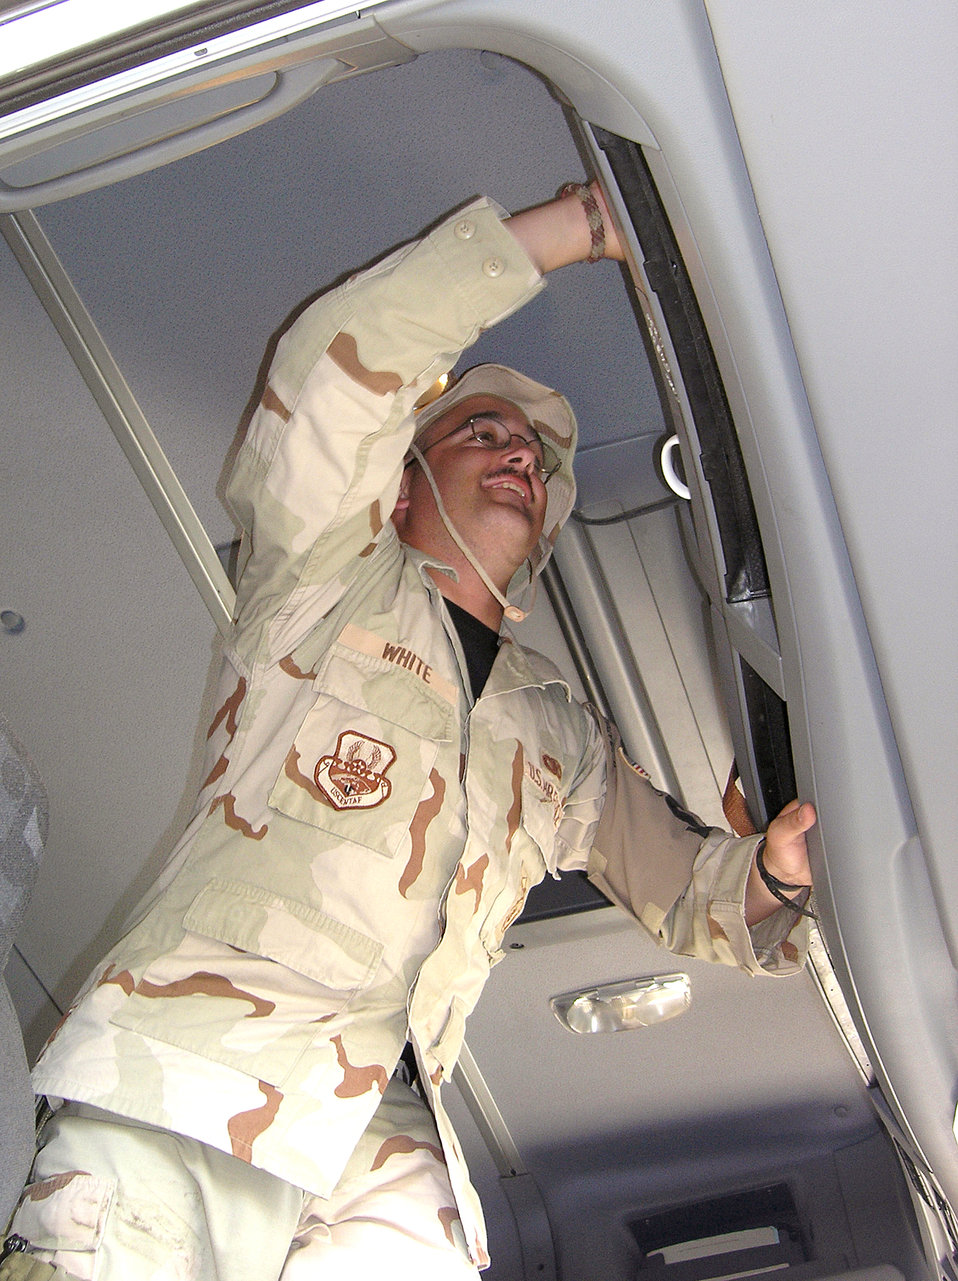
Airmen control, contain, communicate at Ali Base

ALI BASE, Iraq -- Senior Airman Neil White inspects a vehicle here. Thorough checks of vehicles and drivers make the base as safe as possible. Airman White is assigned to the 407th Expeditionary Security Forces Squadron and is deployed from Cheyenne Mountain Air Force Station, Colo.